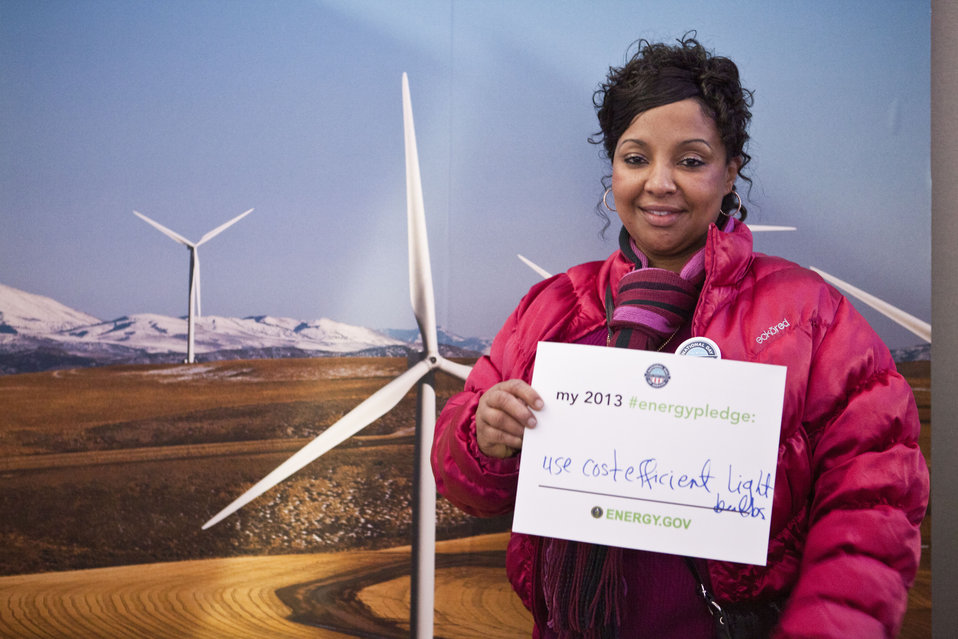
What's your #energypledge?